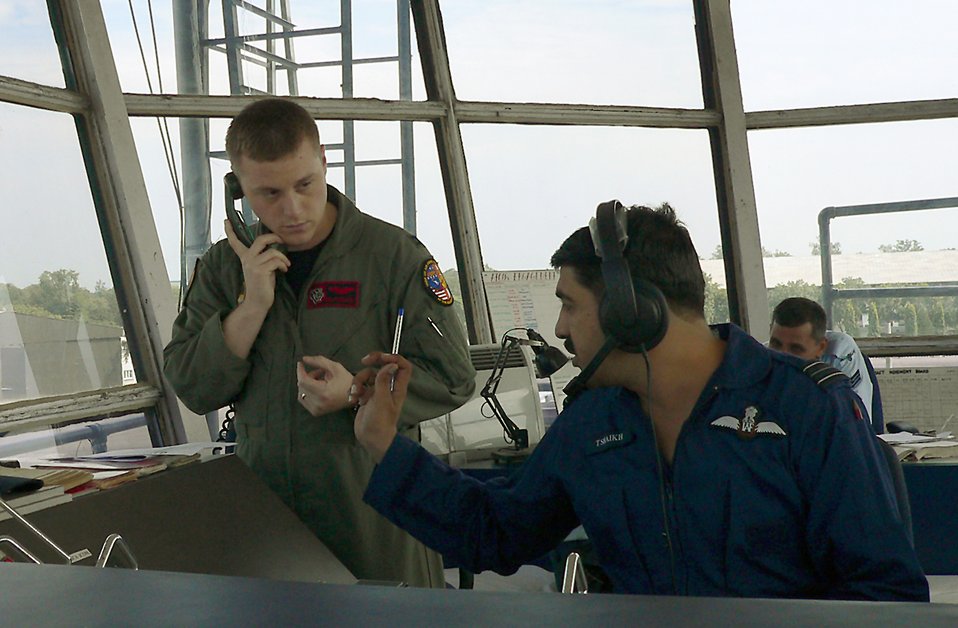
Cope India 06

KALAIKUNDA AIR STATION, India (AFPN) -- Capt. Benjamin Freeborn and Indian Air Force Squadron Leader Tahir Shaikh discuss the order in which aircraft return to base following sorties during the Cope India exercise here. Captain Freeborn works in the air traffic control tower as the supervisor of flying for American Airmen. Squadron Leader Shaikh is the senior launch coordinator for Indian Airmen. Both deployed here for Cope India 06, which began Nov. 7. The exercise will enhance interoperability between the two air forces.